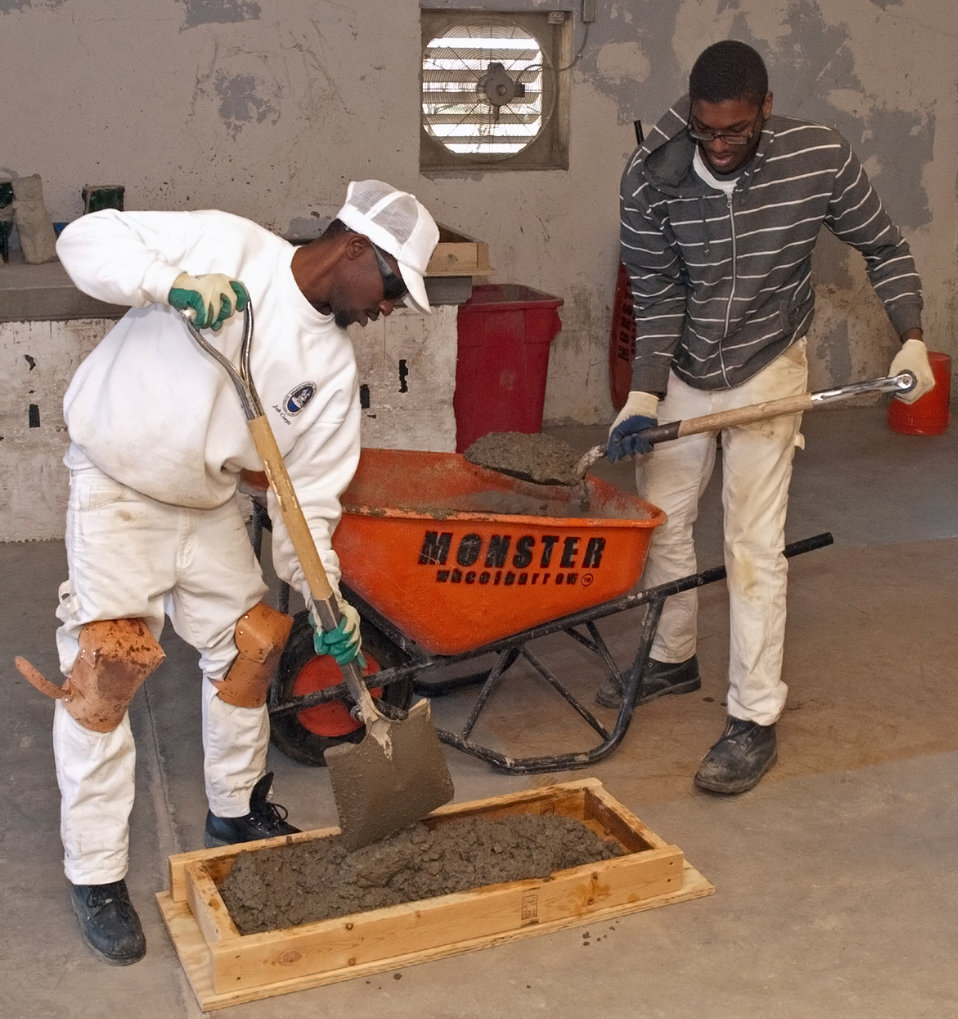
Students Carl Young and Denzel McGill practice concrete pouring techniques in the Cement Masonry trade class at the Job Civilian Conservation Corp Center (JCCCC) in Harpers Ferry, WV on Nov. 8, 2012. The U.S. Forest Service manages 28 Job Corps Civilian Conservation Centers.